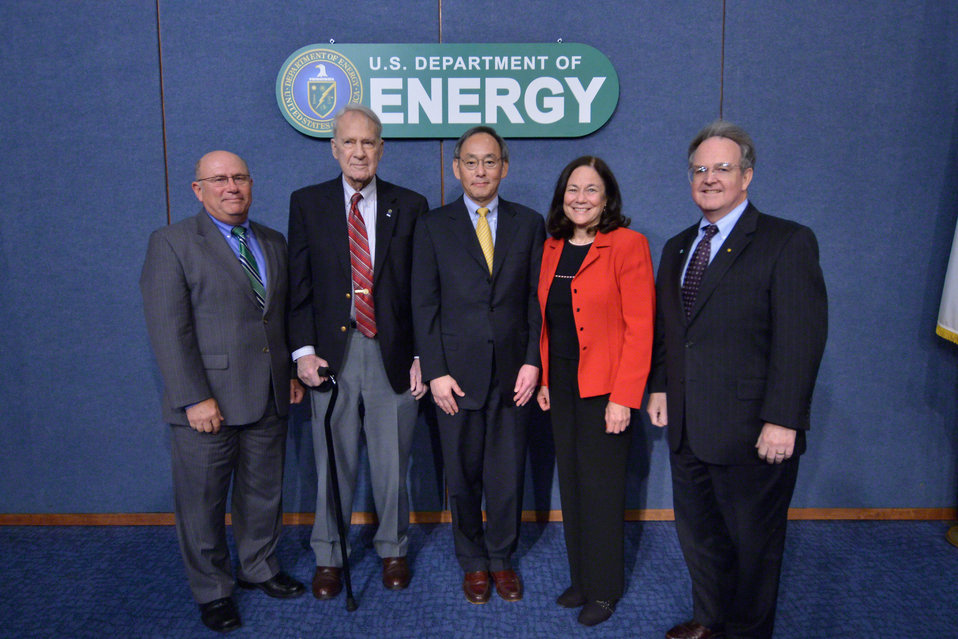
1 CFO

Charter employees from the Office of Chief Financial Officer with Secretary Steven Chu, current Secretary of Energy, and Secretary James Schlesinger, first Secretary of Energy.